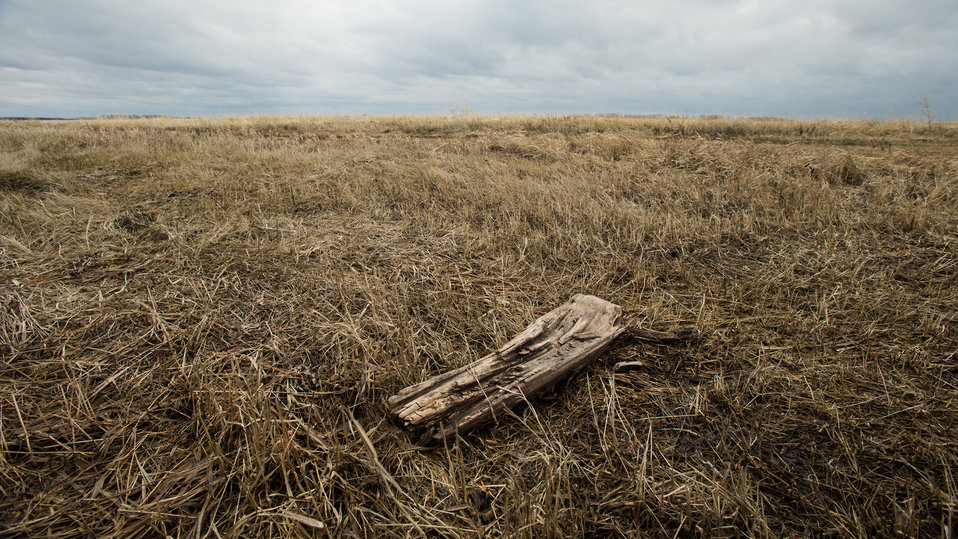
Woody debris on Neil Hanson Emergency Watershed Protection (EWP) Flood Plain Easement located along Red River east of Bowesmont, and part of the Red River basin in ND, Wednesday May 1, 2013. To learn about the Red River Basin Initiative, see www.mn.nrcs.usda.gov/news/features13/RRBI.html.